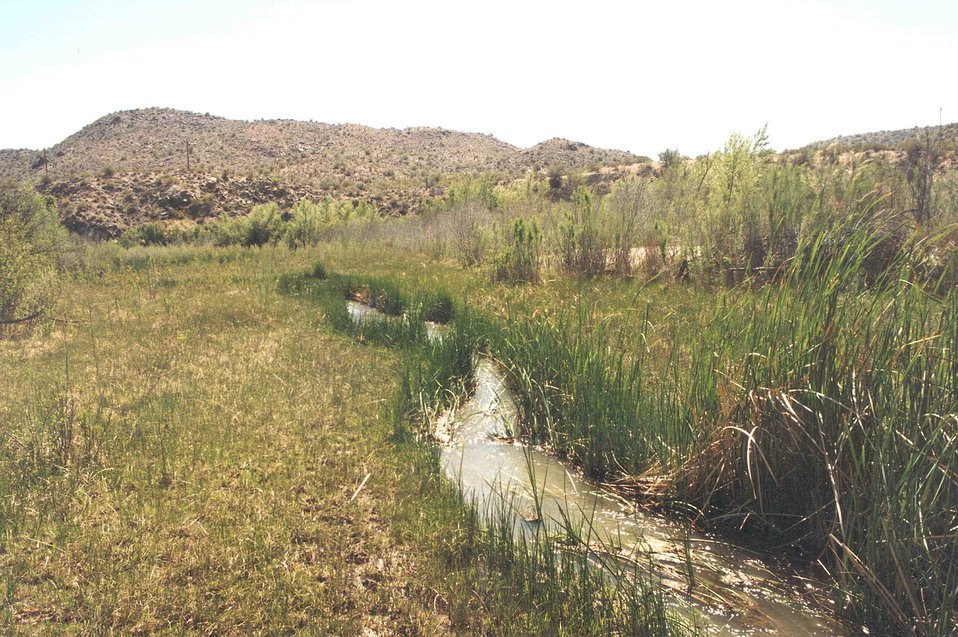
June 1999 "before" photo of Yuma Clapper Rail habitat on the Big Sandy River, prior to grazing management change. Compare to "after" photo KFO5.